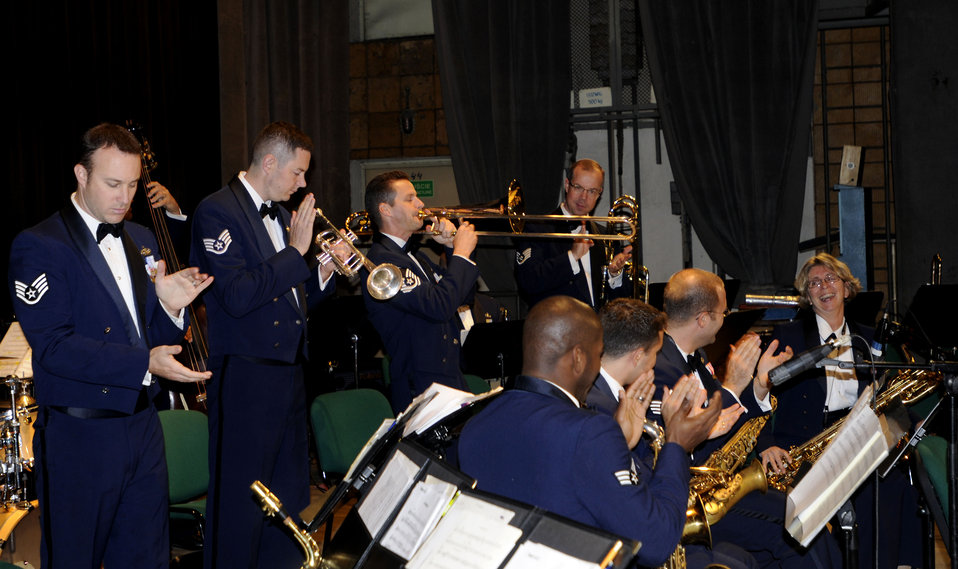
USAFE Band tours Poland

Members of Check Six get everyone clapping during a trombone solo by Master Sgt. Charles Anderson Oct. 24, 2009, at the Kutno Cultural Center in Kutno, Poland. Check Six is one of five smaller groups made up of musicians from the U.S. Air Forces in Europe Concert Band. The band is performing six concerts in six days, Oct. 20-25, in support of USAFE's international relations program in partnership with the U.S. State Department.